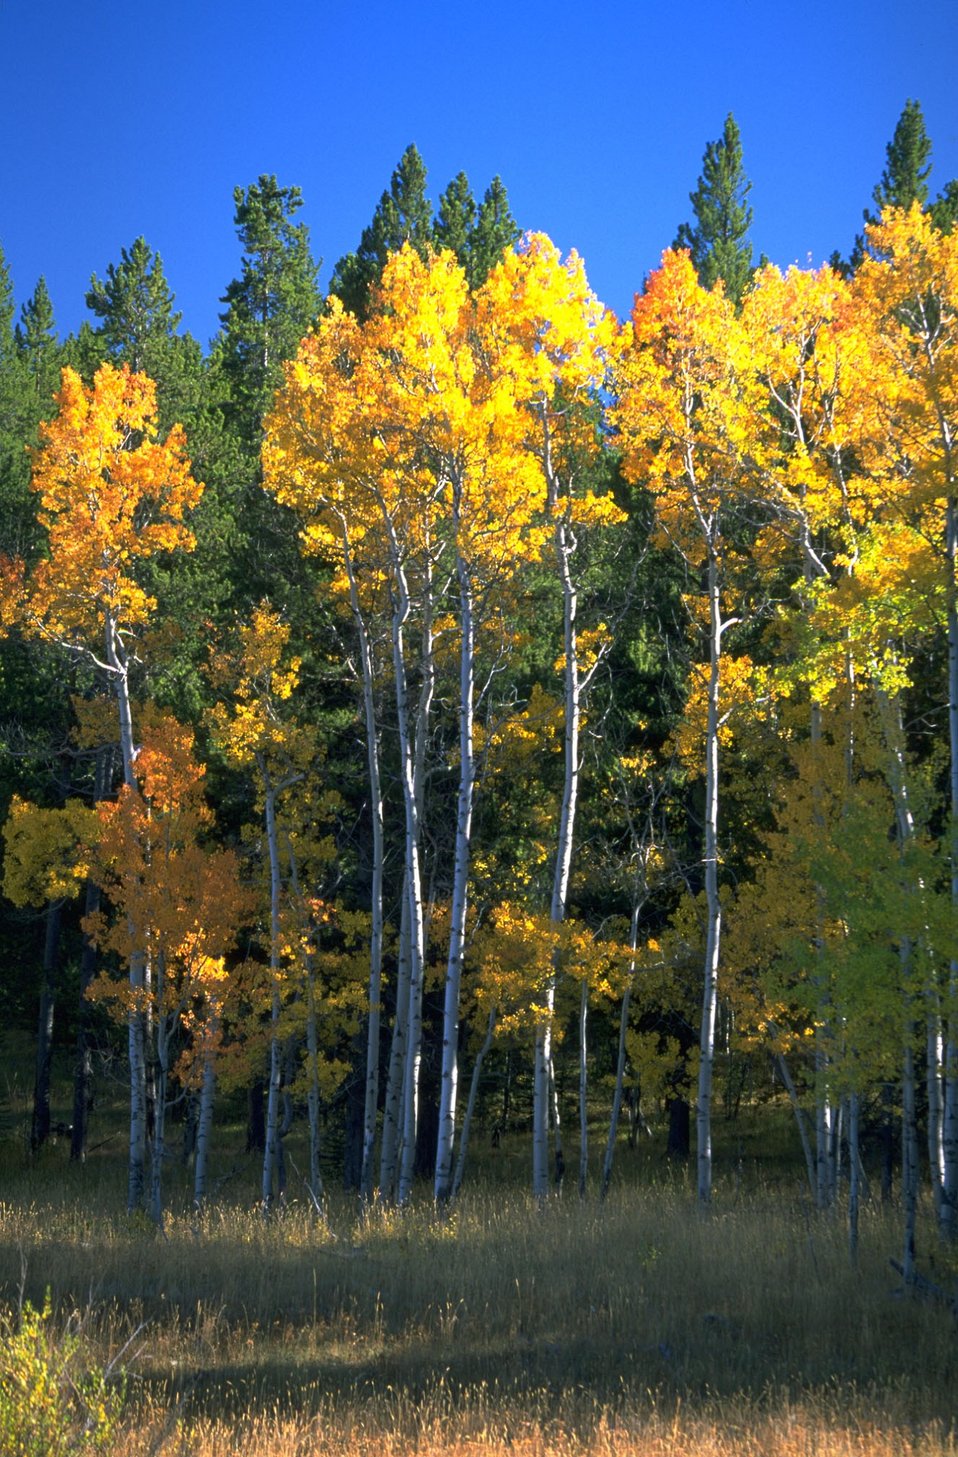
Aspen grove turning to fall colors--some Douglas fir encroachment (vertical)